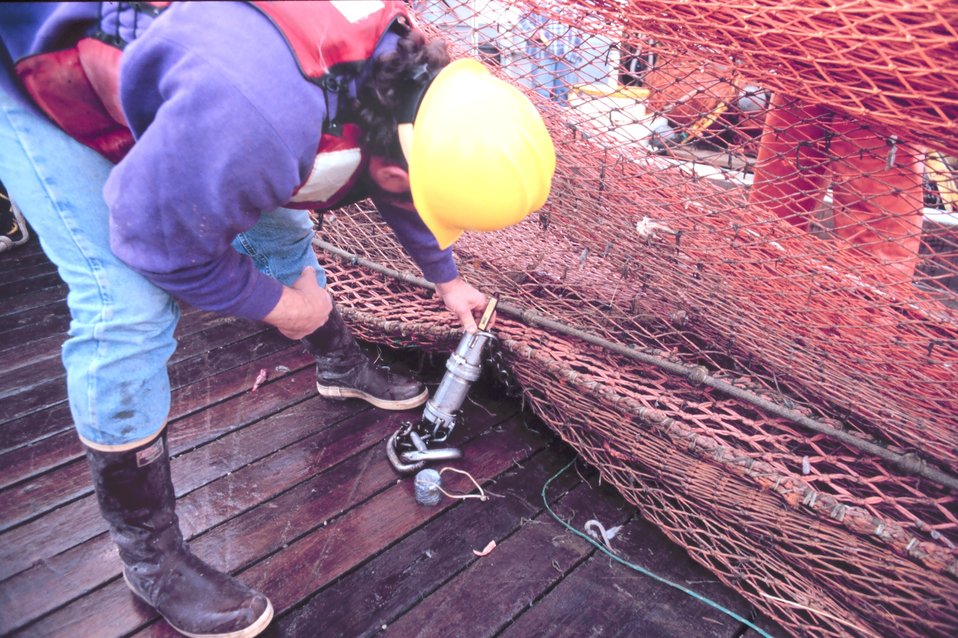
Checking a net sensor on the MILLER FREEMAN